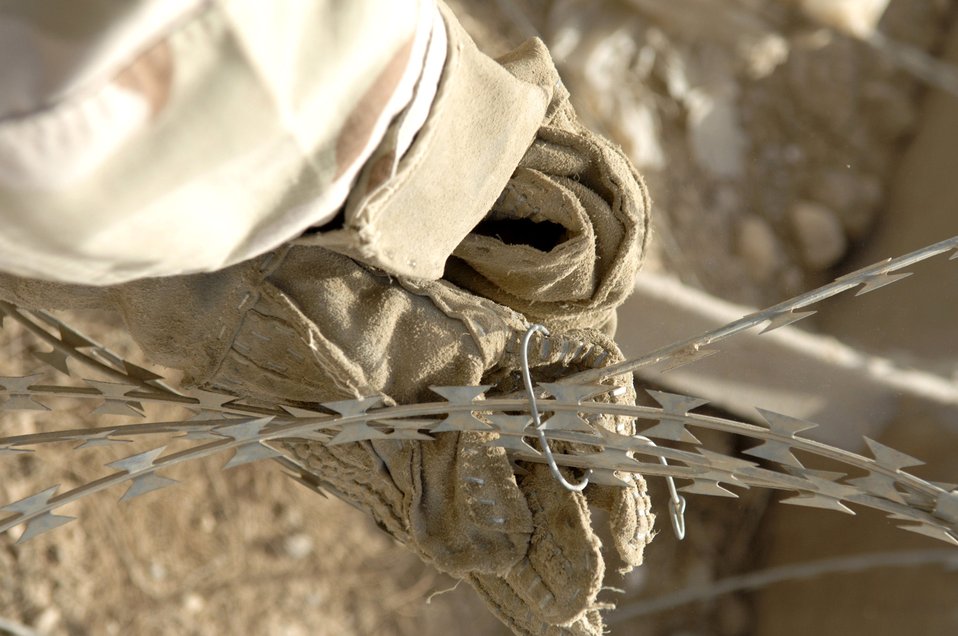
Wired for sound protection

Senior Airman Margaret Wilson connects two lengths of concertina wire together June 8 on a wall to protect one of the compounds on Ali Air Base, Iraq. Airman Wilson is a member of the 407th Expeditionary Security Forces Squadron's Force Protection Flight. The flight is responsible for monitoring local and third country nationals to detect suspicious activity, augmenting security forces during increased threat levels, as well as monitoring and maintaining installation security measures.